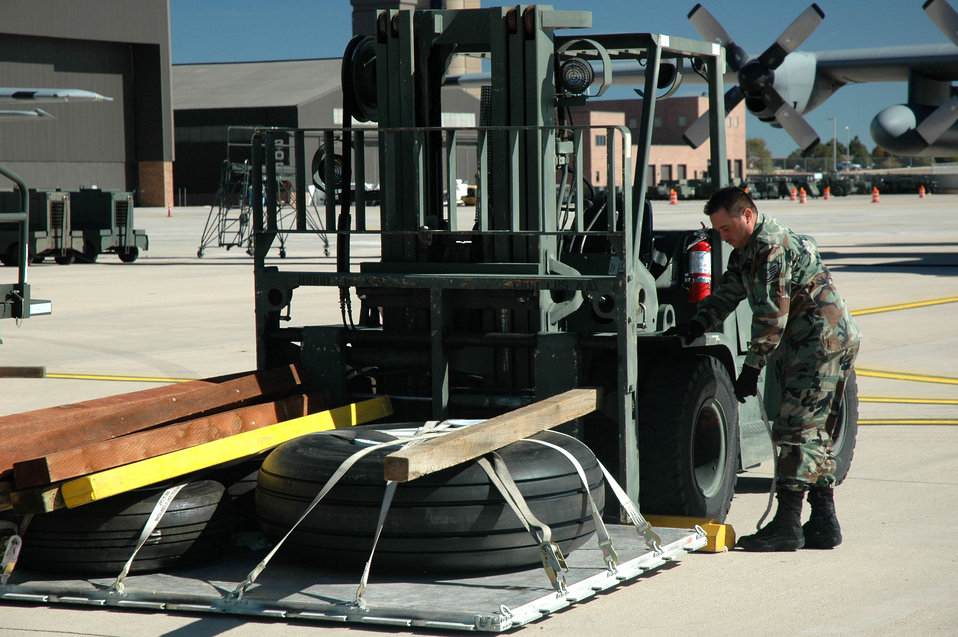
Air Force Reserve unit activated to fight California fires

Tech. Sgt. Ramon Valdiviex prepares aircraft parts and equipment to be loaded onto an Air Force Reserve C-130 bound for southern California Oct. 23 to lay lines of containment to help in the fight against the wildfires burning there. Two of the Modular Airborne Firefighting Systems departed Peterson Air Force Base, Colo., earlier that day. Sergeant Valdiviez was loads the final cargo aircraft with supplies needed to sustain the aerial firefighting mission as long as needed. Sergeant Veldiviex is with the 39th Aerial Port Squadron.